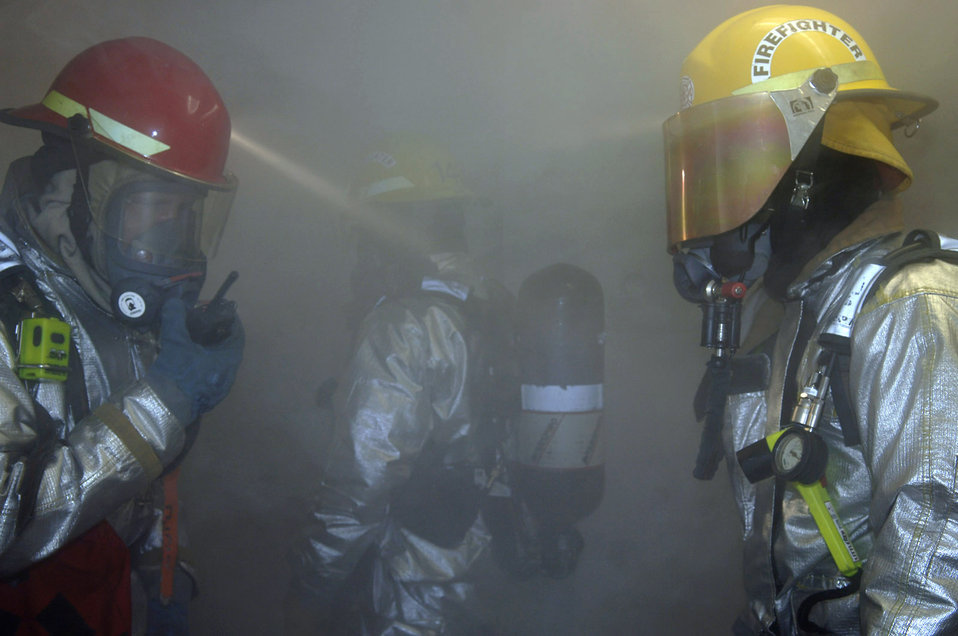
Rescue and readiness

Senior Airman Michael Lewis, Airman 1st Class Robert Whitaker and Tech. Sgt. Steven Nordlund communicate during a simulated fire and evacuation at Davis-Monthan Air Force Base, Ariz., in preparation for an operational readiness inspection. The three Airmen are firefighters assigned to the 355th Civil Engineer Squadron.